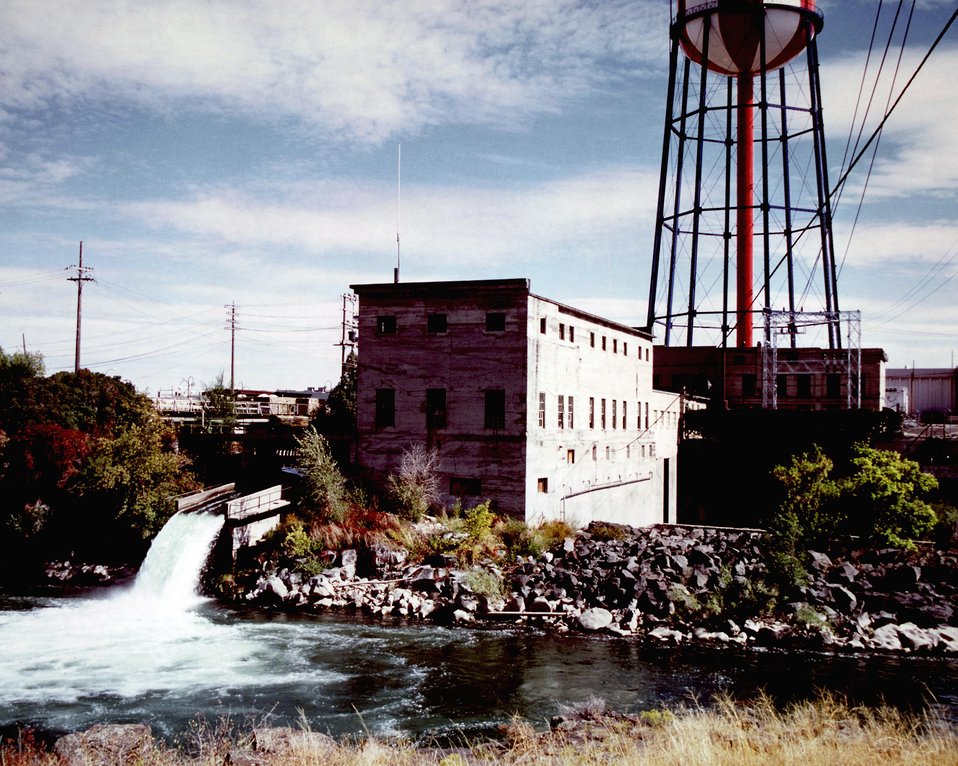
EXISTING CITY PLANT POWER HOUSE TO BE DEMOLISHED.

THE DEMONSTRATION PROJECT AT IDAHO FALLS CONSISTS OF REDEVELOPING THE CITY'S THREE EXISTING POWER PLANT SITES. THESE THREE SITES, ALONG THE SNAKE RIVER, ARE GOING TO CONTAIN LOW-HEAD HYDROELECTRIC PLANTS. A 7.2 MWE BULB TURBINE-GENERATOR WILL BE INSTALLED ON EACH SITE. ONE SITE WILL ALSO MAINTAIN TWO EXISTING 1.875 MWE UNITS AS STANDBY OR PEAK FLOW UNITS. PRIOR TO THIS PROJECT, BULB TURBINES HAD ONLY BEEN USED FOR HIGH POWER GENERATION. THIS PROJECT IS GOING TO DEMONSTRATE THAT BULB TURBINES CAN BE USED ECONOMICALLY FOR SMALL-SCALE, LOW-HEAD HYDROELECTRIC POWER GENERATION. THE PROJECT IS ALSO GOING TO DEMONSTRATE THAT THIS TECHNOLOGY CAN BE USED IMMEDIATELY, IT DOES NOT NEED EXTENSIVE RESEARCH AND DEVELOPMENT.